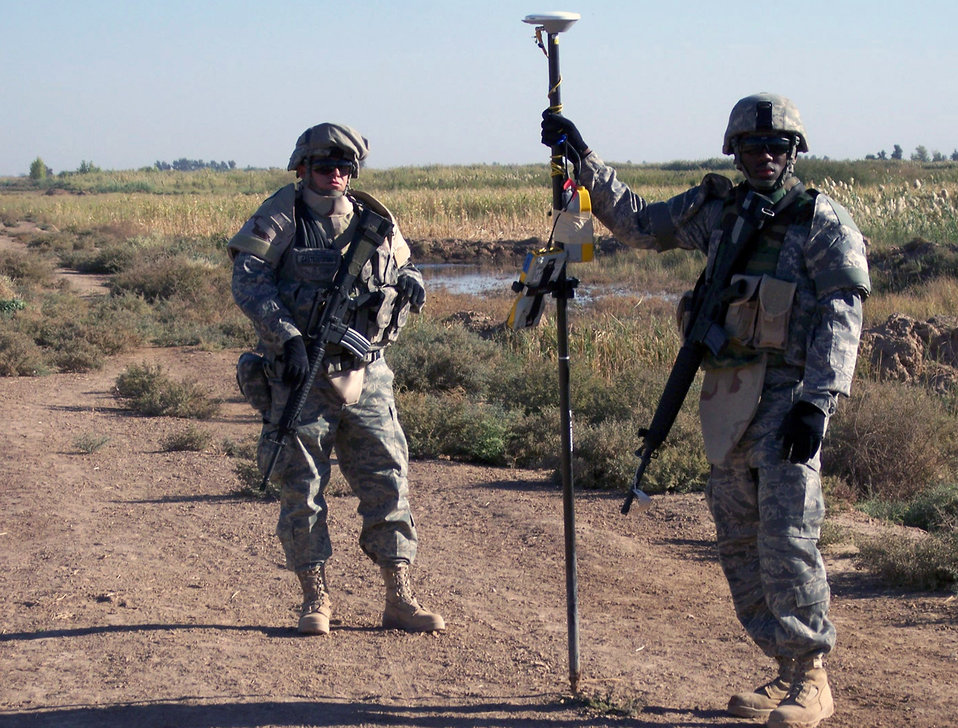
Engineering assistants help FOB quality of life

Staff Sgt. Frank Castelluccio (left) provides security as Senior Airman Renardo Sanders mans the surveying equipment at the levee outside Balad Air Base, Iraq, Jan. 7. Both Airmen are 732nd Expeditionary Civil Engineering Squadron engineering assistants. Sergeant Castelluccio is deployed from Kadena Air Base, Japan, and Airman Sanders is deployed from Beale Air Force Base, Calif.